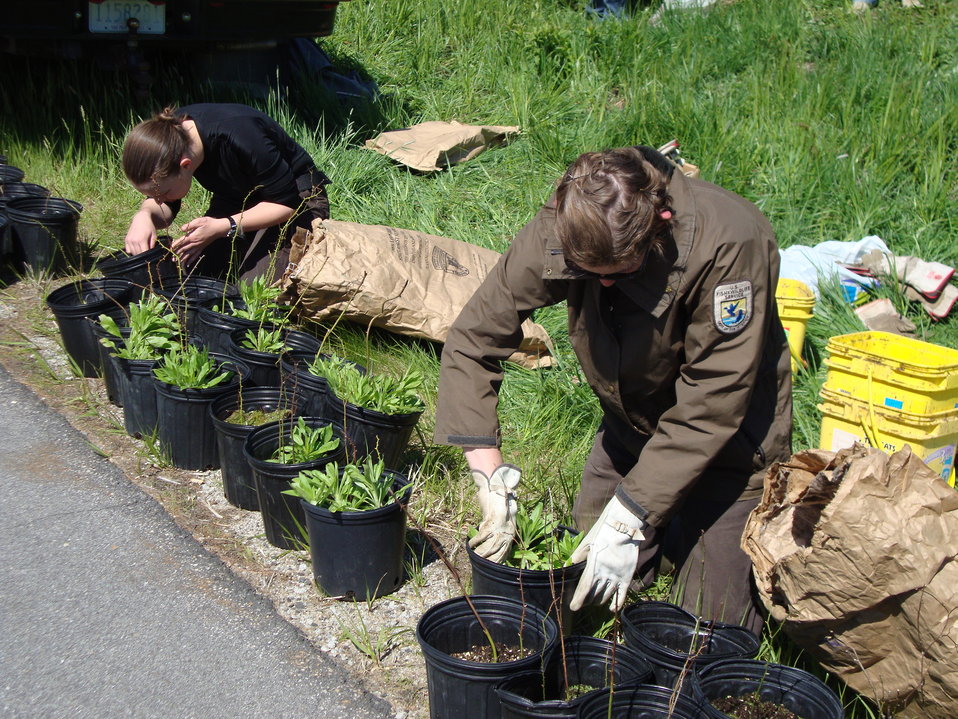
Restoring homes for New England cottontails

Planting native shrubs on Cutts Island in May 2009. Planting these helps create habitat for the New England cottontail, which uses thickets, young forest and shrubland for its home. These young forests are generally less than 25 years old.